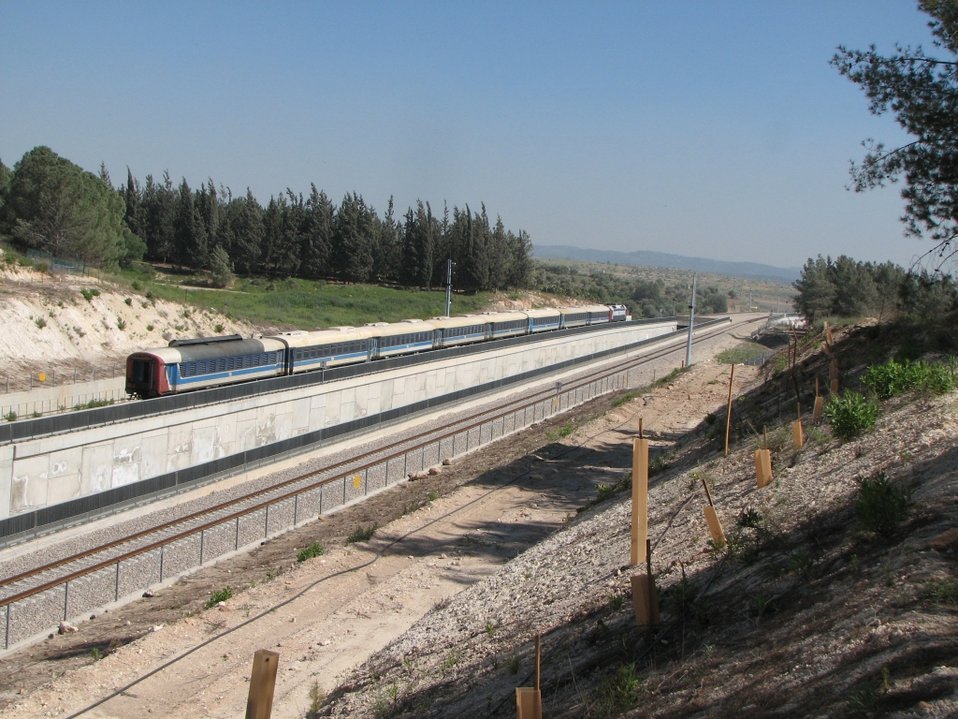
עברית: קרונות גרורי קטר מתוצרת בוריס קידריץ ואסלינגן